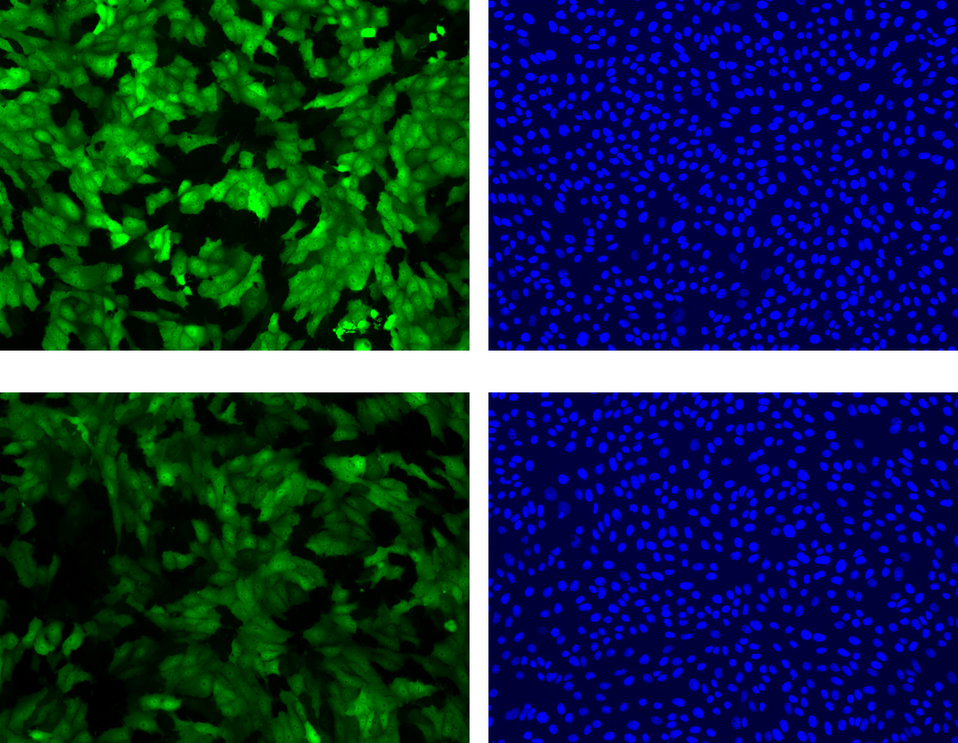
Toxin; Ricin

Microscopic photographs showing the level of fluorescence (green images) and the numbers of cells (blue images) at the time the cells were exposed to ricin and 6 hours later. Note that the fluorescence has decreased (more black regions in the bottom left photo) while the cell count remains virtually the same. This shows that the NIST assay detects ricin even before significant cell death occurs.